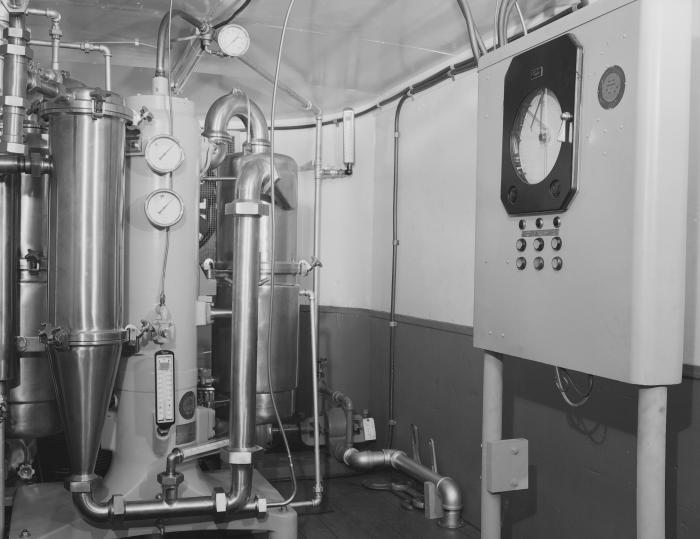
This historic image depicted the interior of a dairy plant where the process of milk pasteurization took place.